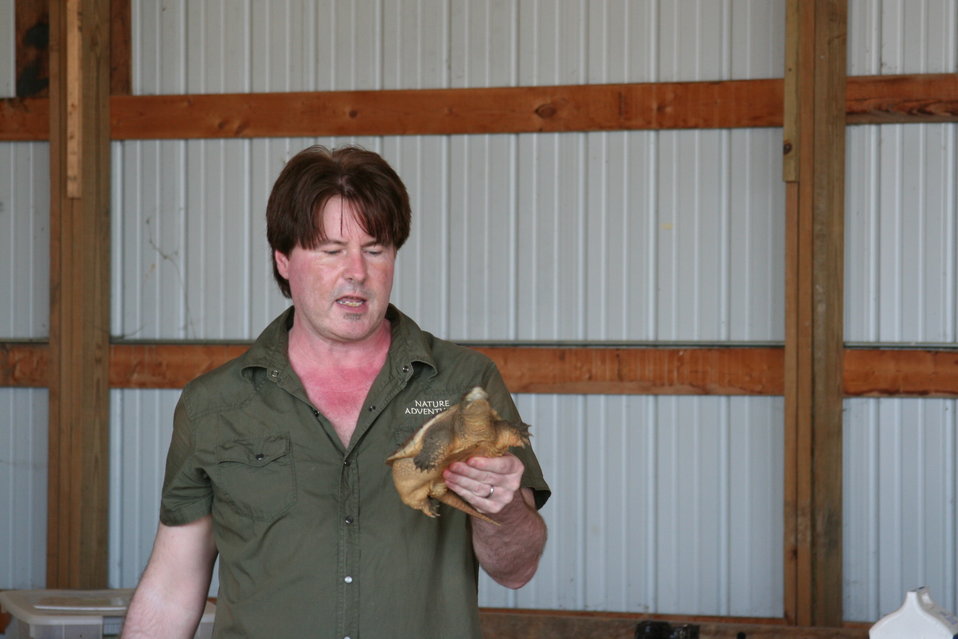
2011 Huron Prairie Fest